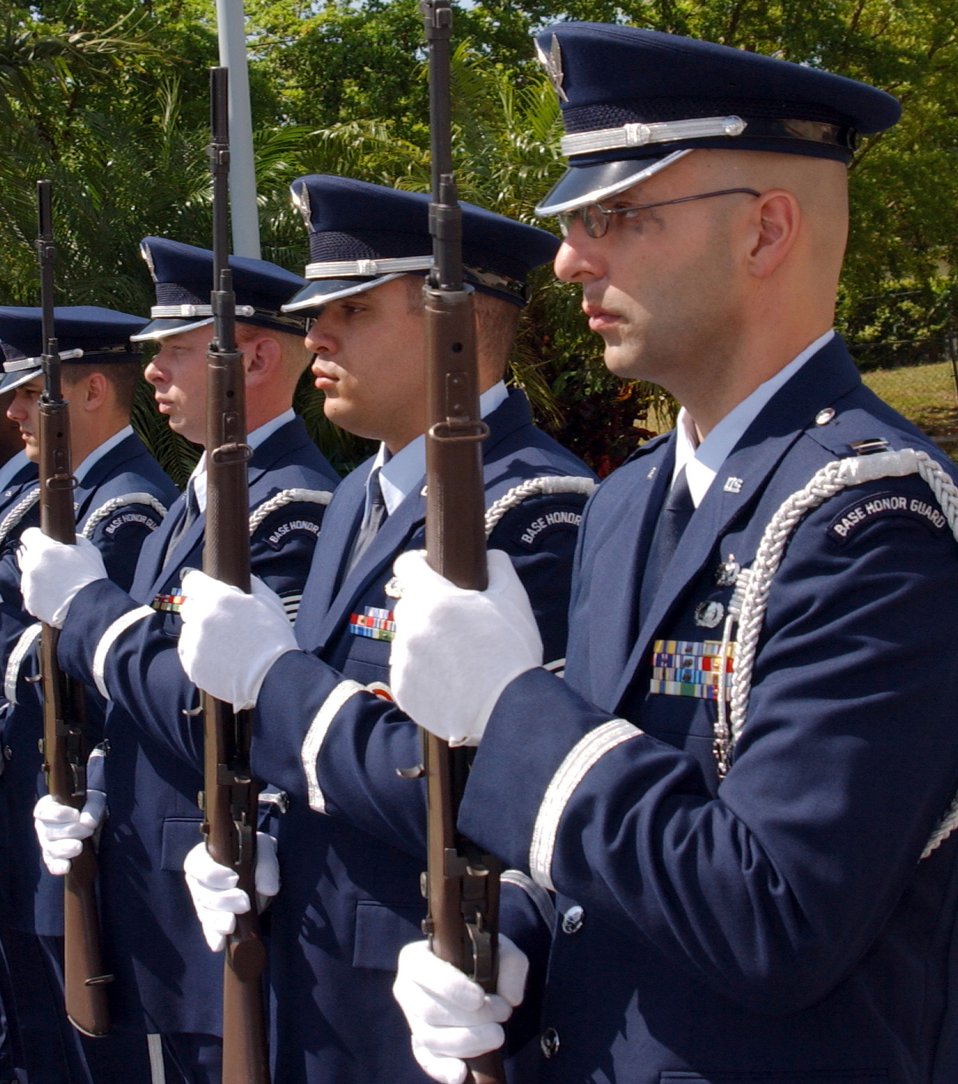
Honoring fallen heroes full-time job

HOMESTEAD AIR RESERVE BASE, Fla. -- (From front) Capt. Paul Hubenthal and Staff Sgts. Leo Castellano, Ryan Ayers and Luis Pacheco take part in a military ceremony. The honor guard here performs military funeral honors for veterans throughout South Florida.